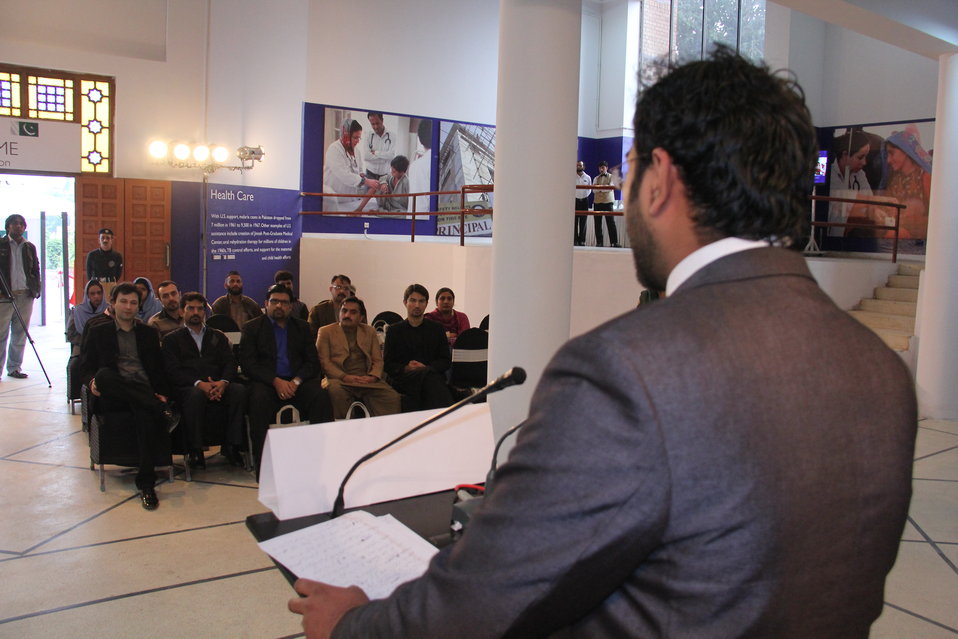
USAID Senior Program Specialist Habib-ur-Rehman telling the attendees about the exhibition.